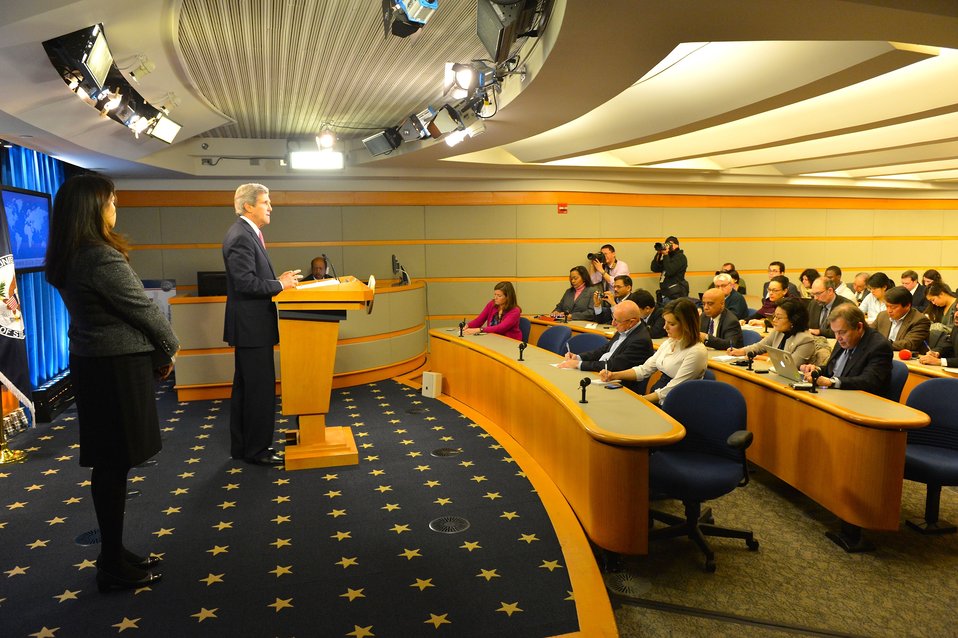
Annual Country Report on Human Rights

U.S. Secretary of State John Kerry releases the Annual Country Report on Human Rights at the U.S. Department of State in Washington, D.C., on February 27, 2014.